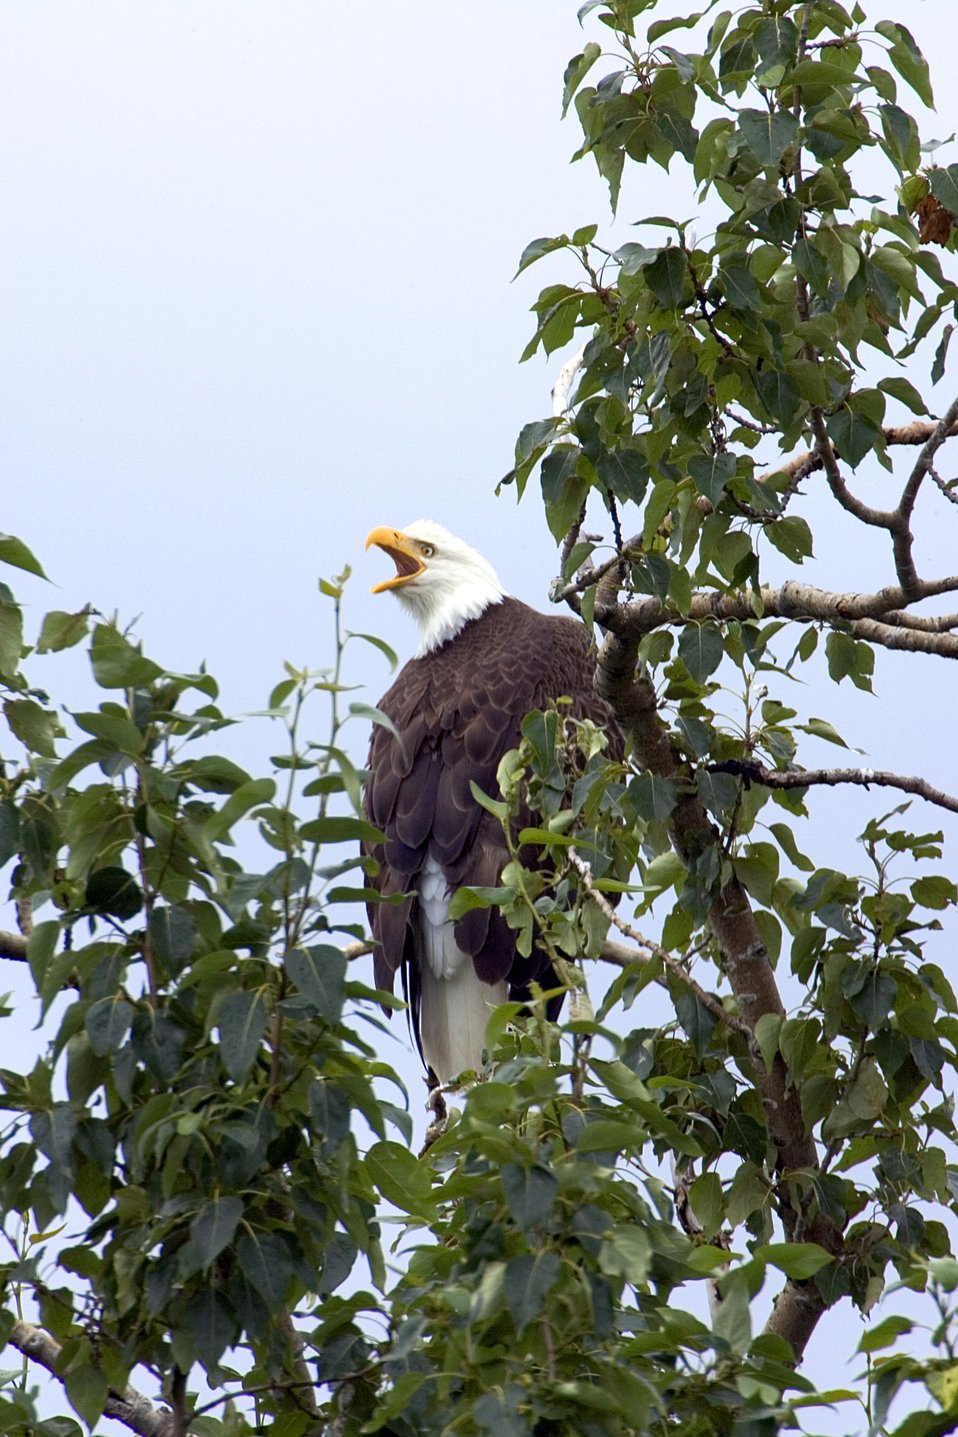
Wildlife of Kodiak Refuge

Bald Eagle